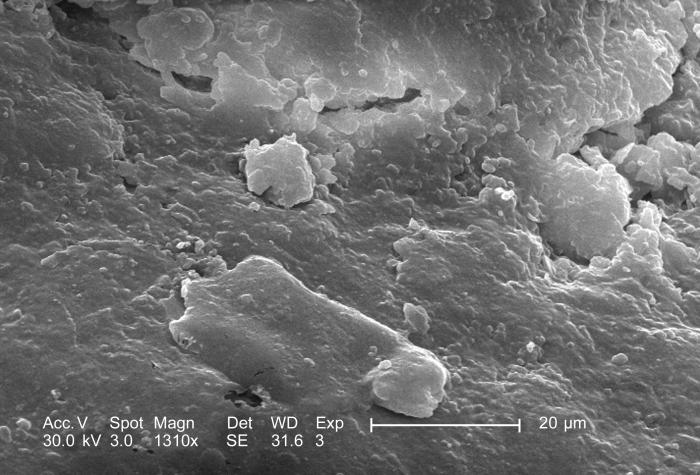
This highly magnified 2005 scanning electron micrograph (SEM) depicts the morphological characteristics seen on the surface of a domesticated cat's, Felis domesticus, claw; Magnified 1310x. The cat's needle-sharp claws are highly specialized structures specifically designed for grasping prey, and assisting in exercises that demand a great degree of traction such as climbing trees, running, and even grooming. Its claws are retractable, which allows the animal to pull the structures back into the skin of its paws, thereby, reducing the degree of daily wear and tear. The irregularly shaped particulates include bits of foreign debris, and dead, sloughing keratinized cells, which are the building blocks that form the nail. This claw nail was found in the home of a cat owner after having been sloughed off of the paw of a house cat in the course of his everyday activities.